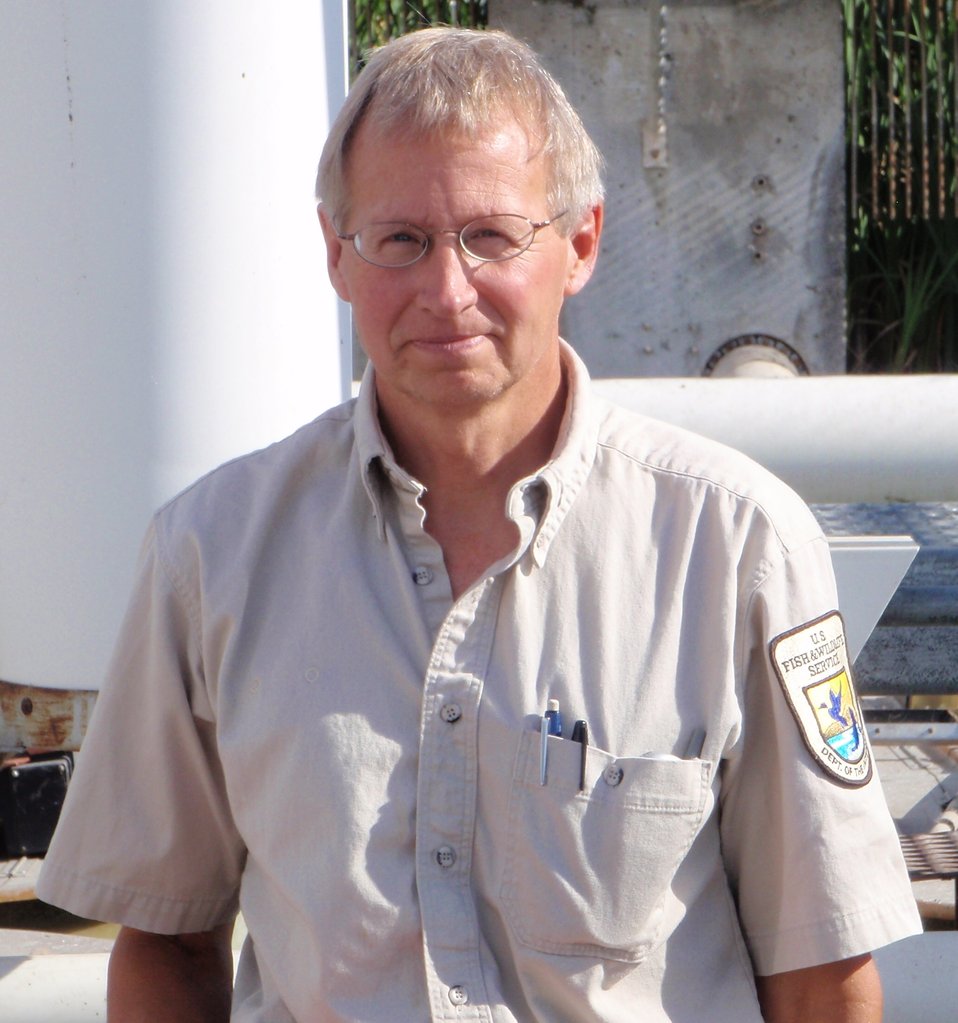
Dan Carty has been with the USFWS for 30 years and with the AADAP Program for 16 years, he is retiring in March 2014.

Rachel Carson Award for Scientific Excellence (Group) – 2013